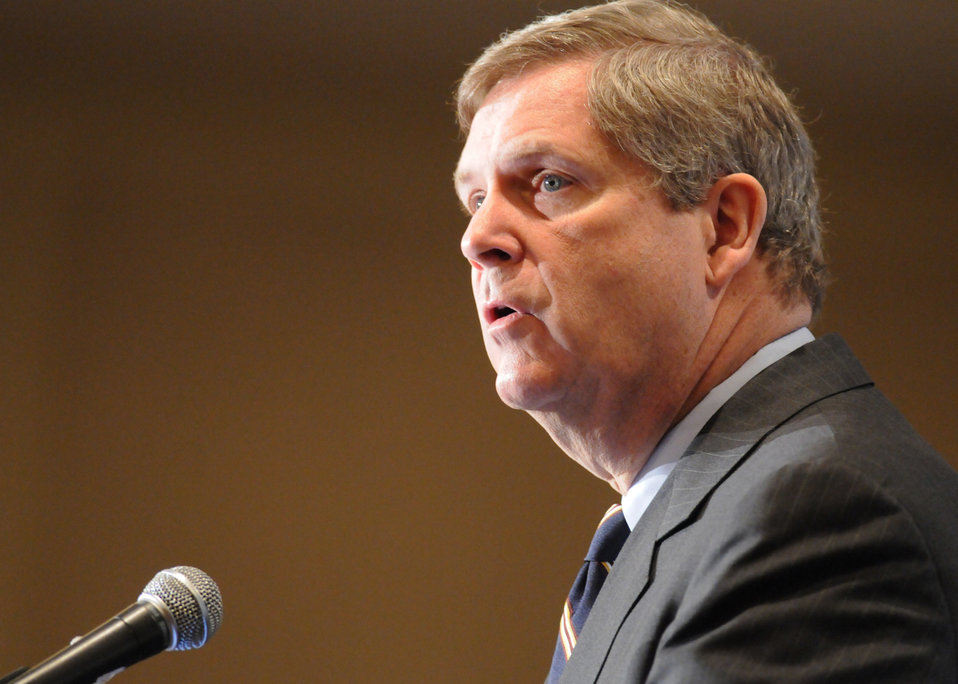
Agriculture Secretary Tom Vilsack makes remarks at the World Agriculture Outlook Board Forum held in Arlington, VA, on Thursday, February 24, 2011.